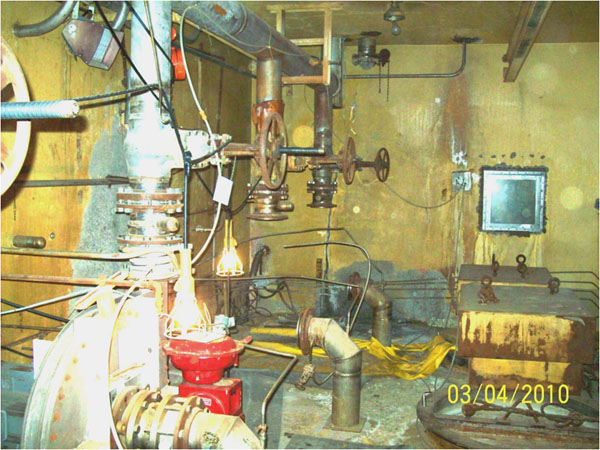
West Valley Recovery Act Workers Clean Up Cell to Prepare Facility for Demolition

Work is under way to remove contamination in the Off Gas Blower Room inside a five-story former spent nuclear fuel reprocessing facility at West Valley Demonstration Project.